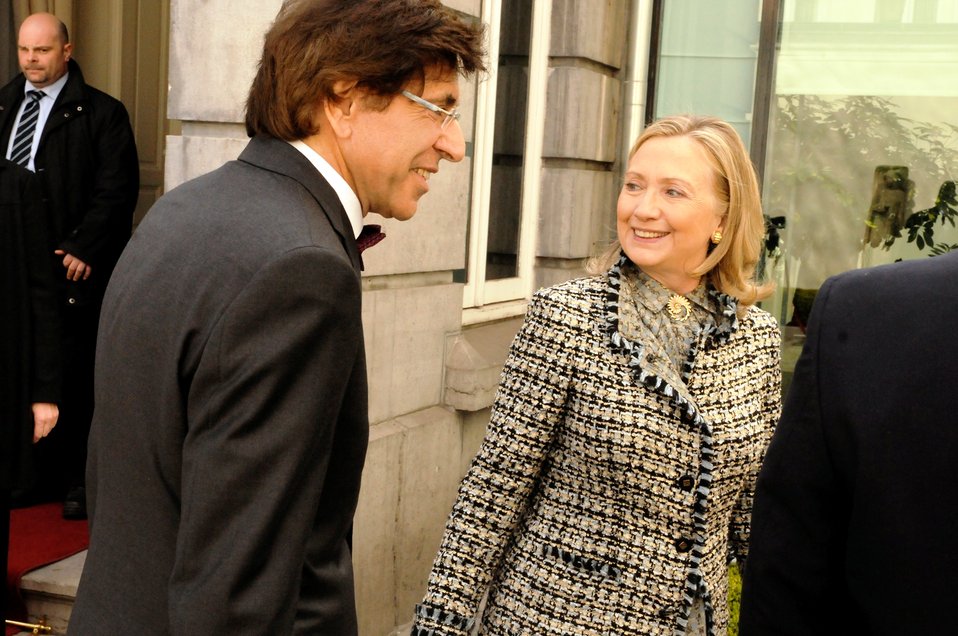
Secretary Clinton Bids Farewell to Belgian Prime Minister Di Rupo

U.S. Secretary of State Hillary Rodham Clinton bids farewell to Belgian Prime Minister Elio Di Rupo after their bilateral meeting at his residence in Brussels, Belgium, on April 18, 2012.